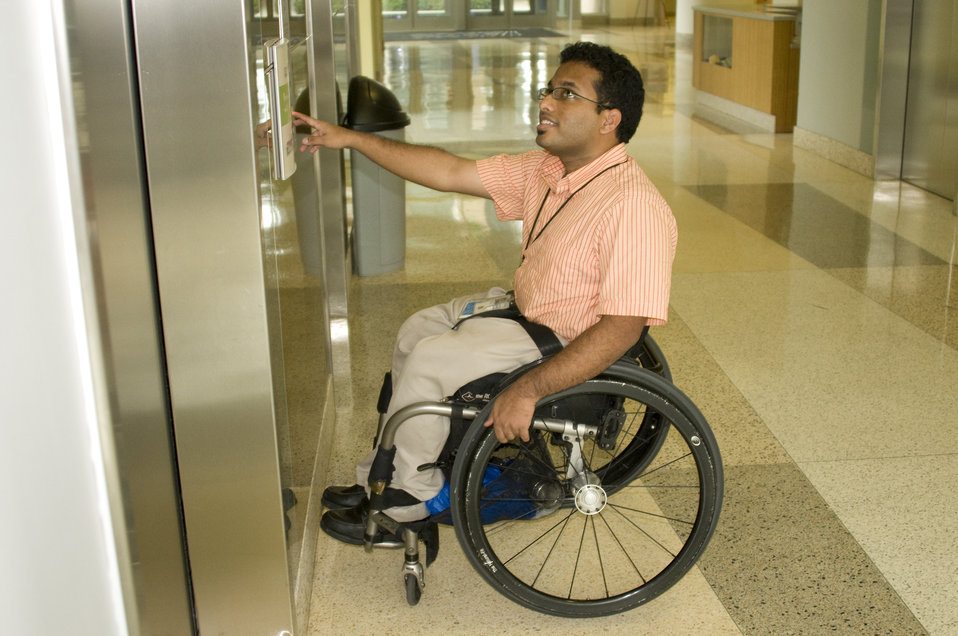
Seated in a wheelchair, the man depicted here was in the process of hailing an elevator from the first floor of one of the Centers for Disease Control and Prevention's (CDC) campus facilities. He was pressing the 'Up' call button, and was looking at the lighted floor indicator above the doors, as he awaited the arrival of an elevator car.